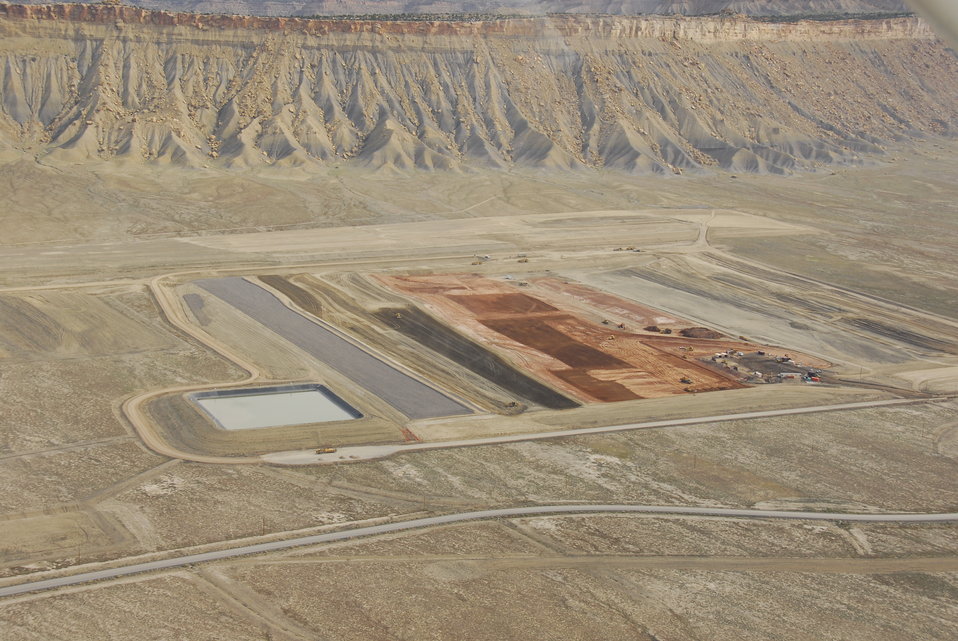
Moab disposal cell

The disposal cell is shown here in various stages, from the final cover layers (the light gray section on the left), to the tailings material being compacted (the reddish portion in the center), to the excavation of the second phase (right).